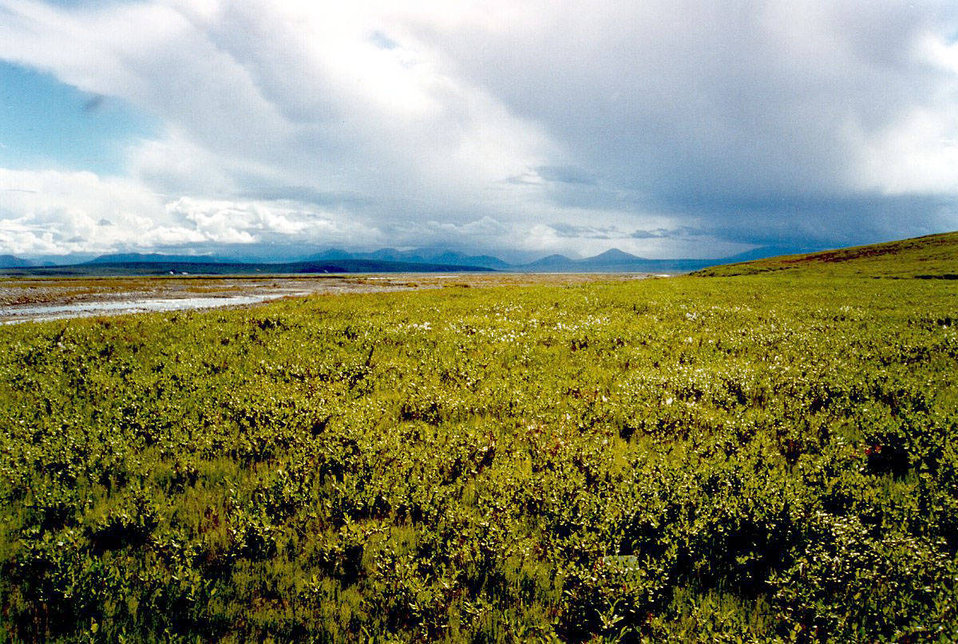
Arctic Tundra

Photo credit: USFWS

Climate-driven changes in the tundra ecosystem are already being observed, and include early onset and increased length of growing season, melting of ground ice and frozen soils, increased encroachment of shrubs into tundra, and rapid erosion of shorelines in coastal areas